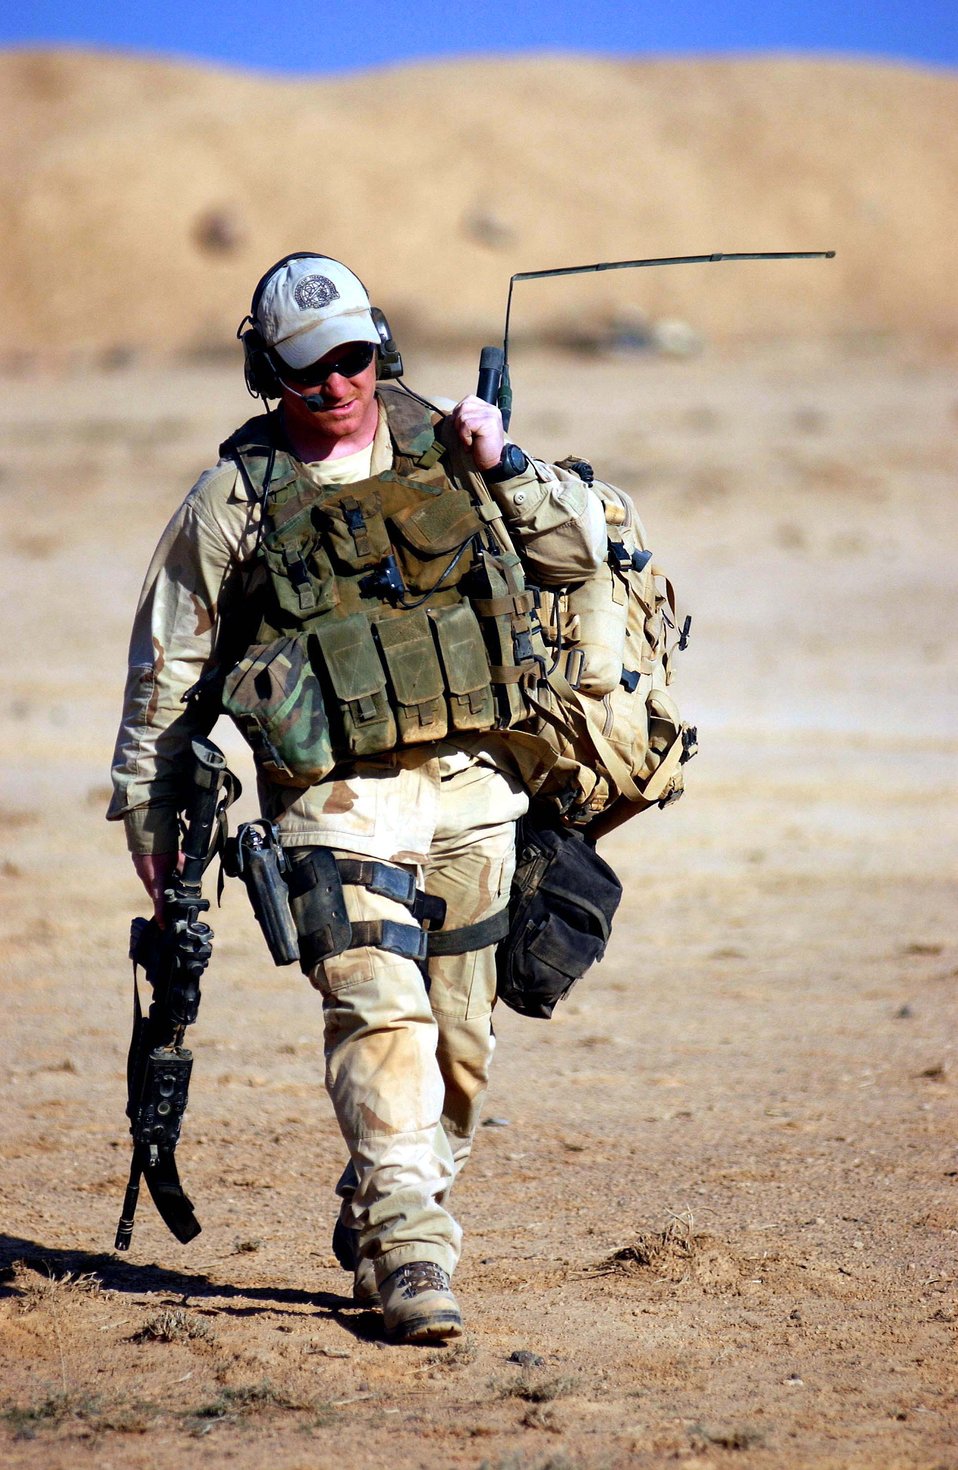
Combat controllers key in war on terror

OPERATION ENDURING FREEDOM -- A combat controller walks back to his teammates after practicing firing movements at an undisclosed location.